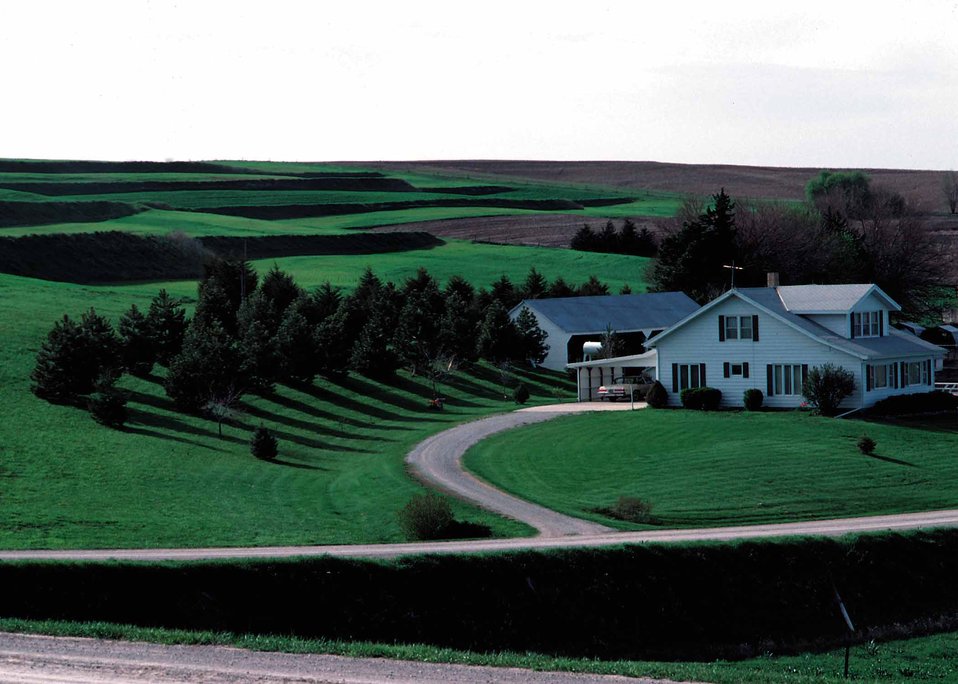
Farmstead windbreak in western Iowa.